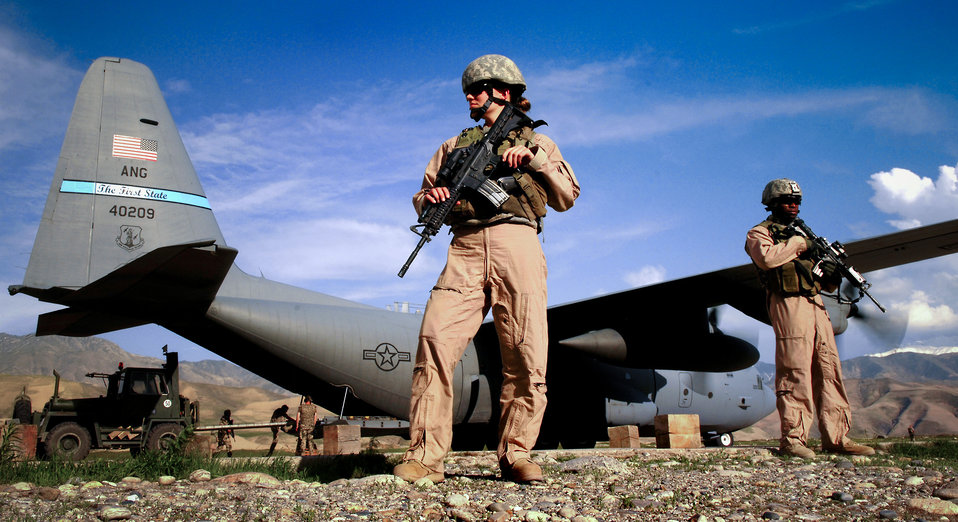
Don't cross the line

Airman 1st Class Kelliea Guthrie (left) and Senior Airman Greg Ellis provide security April 23 for a C-130 Hercules during a cargo mission at Feyzabab Airfield in Afghanistan. Both Airmen are part of the fly-away security forces team assigned to the 455th Expeditionary Security Forces.